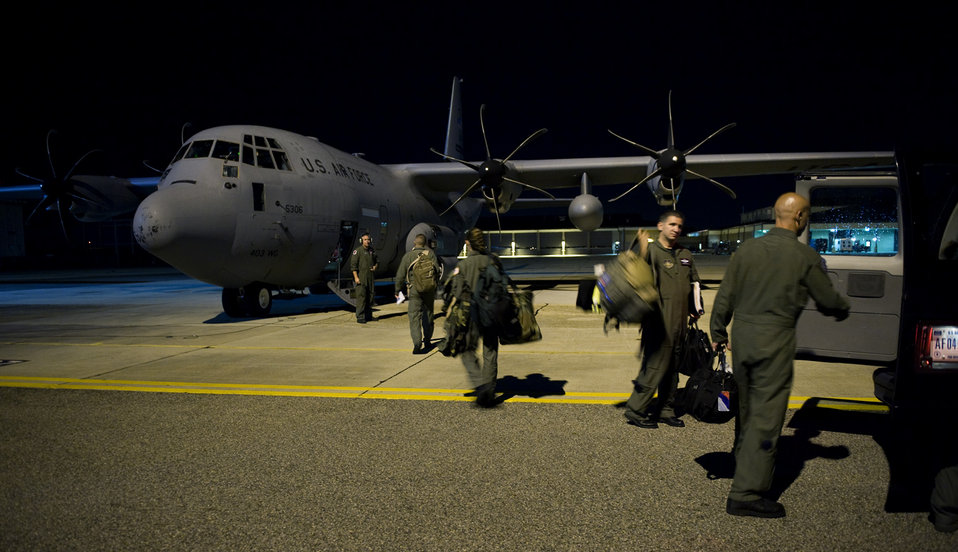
Hurricane Hunter

A Hurricane Hunter crew from the 53rd Weather Reconnaissance Squadron at Keesler Air Force Base, Miss, loads a WC-130J Hercules aircraft for a late night mission into Hurricane Alex June 29, 2010.